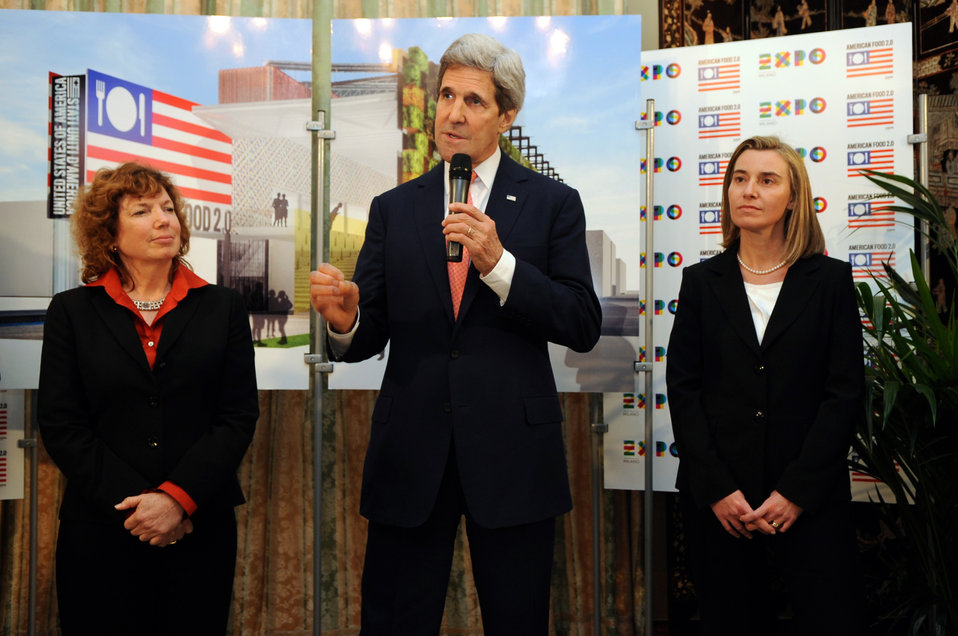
Secretary Kerry and Italian Foreign Minister Mogherini Discuss U.S. Participation in Milan Expo 2015

U.S. Secretary of State John Kerry, flanked by Italian Foreign Minister Federica Mogherini and Embassy Rome Deputy Chief of Mission Kathleen Doherty, highlights an upcoming U.S. food pavilion at the Milan Expo 2015 during an appearance in Rome, Italy, on March 27, 2014.